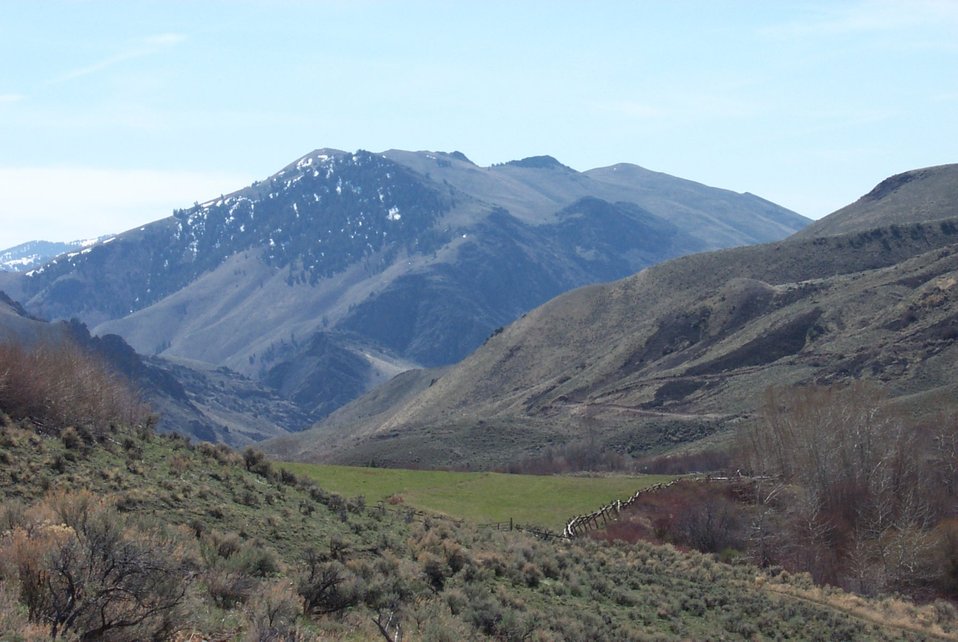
Salmon Field Office Realty Public access Exchange UCSC Upper Columbia Salmon Clearwater District